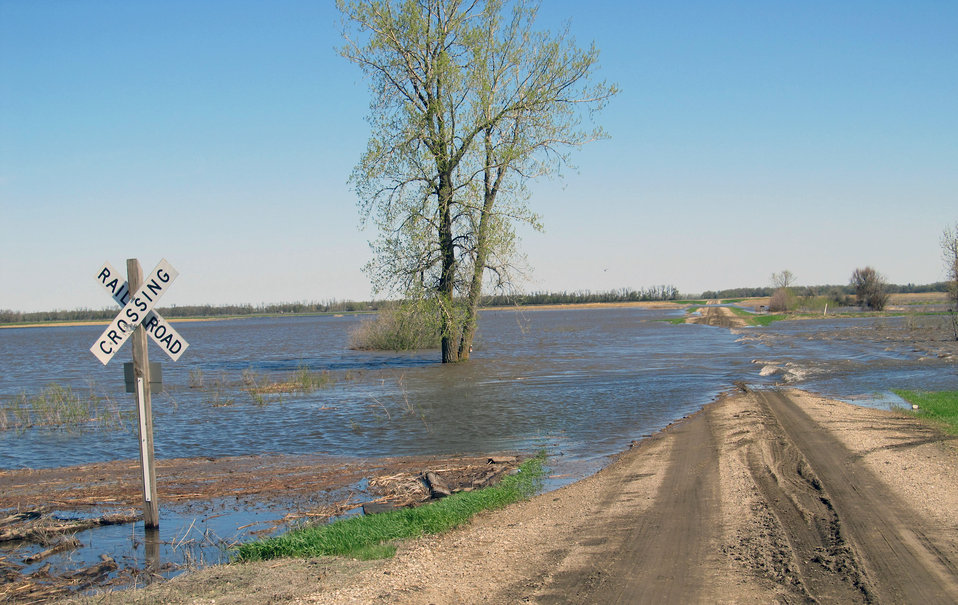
Flooding and water damage in the Park and Tongue River Watersheds located in Cavalier, Pembina and Cavalaier Counties in ND on Thursday, May 23, 2013.